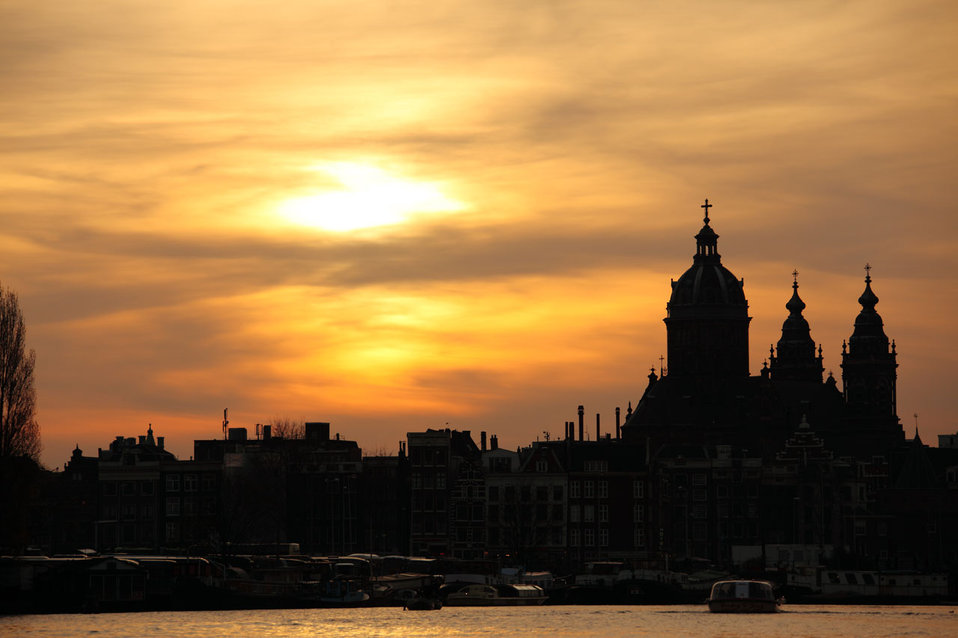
Sunset in amsterdam

Silhouette of amsterdam in sunset.